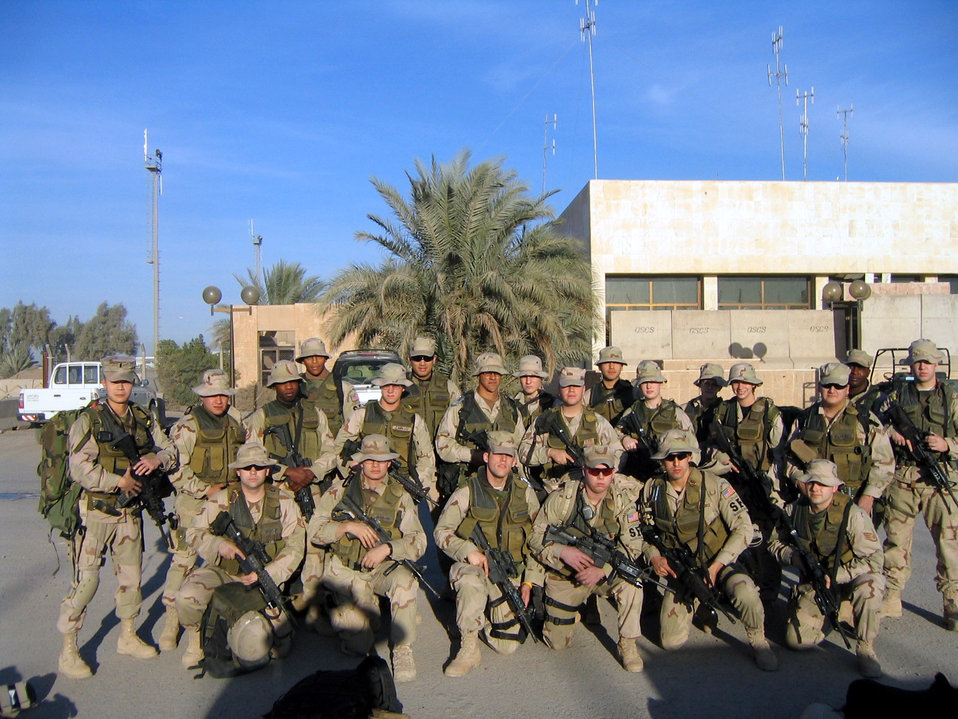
Operation Iraqi Freedom

Deployed to Baghdad International Airport, the 31st Security Forces Squadron delegation photo from Aviano Air Base, Italy, get together for a group photo in 2005.